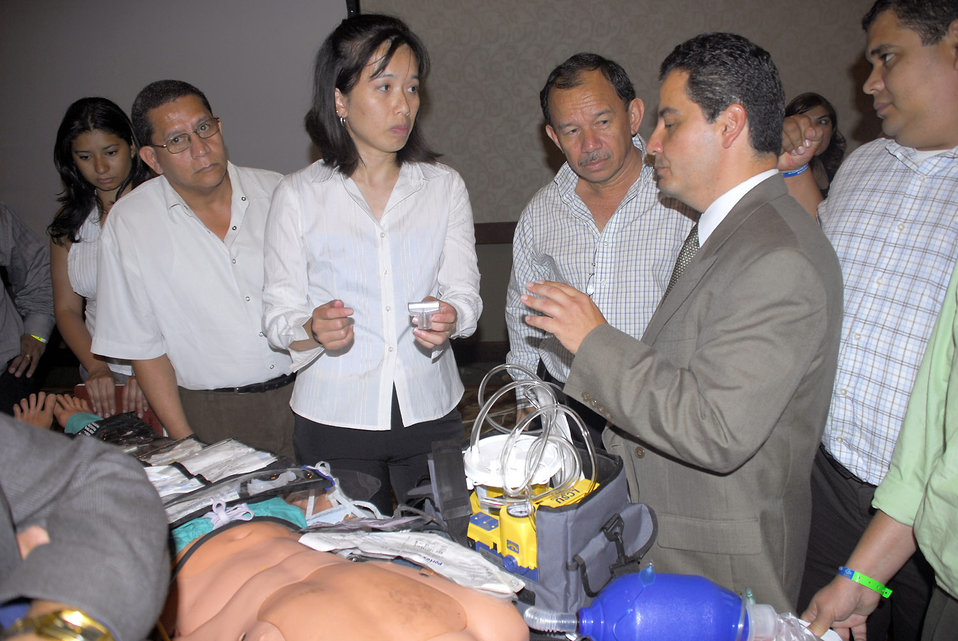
JTF-Bravo MEDEL team teach trauma course to Honduran medical proffesionals

Maj. Jade Hin teaches a course about airway breathing management July 8 at a Honduran Medical conference in Tegucigalpa, Honduras. More than 200 medical professional attended the course offered by the Joint Task Force-Bravo Medical Element. Major Hin is deployed from Misawa Air Base, Japan.